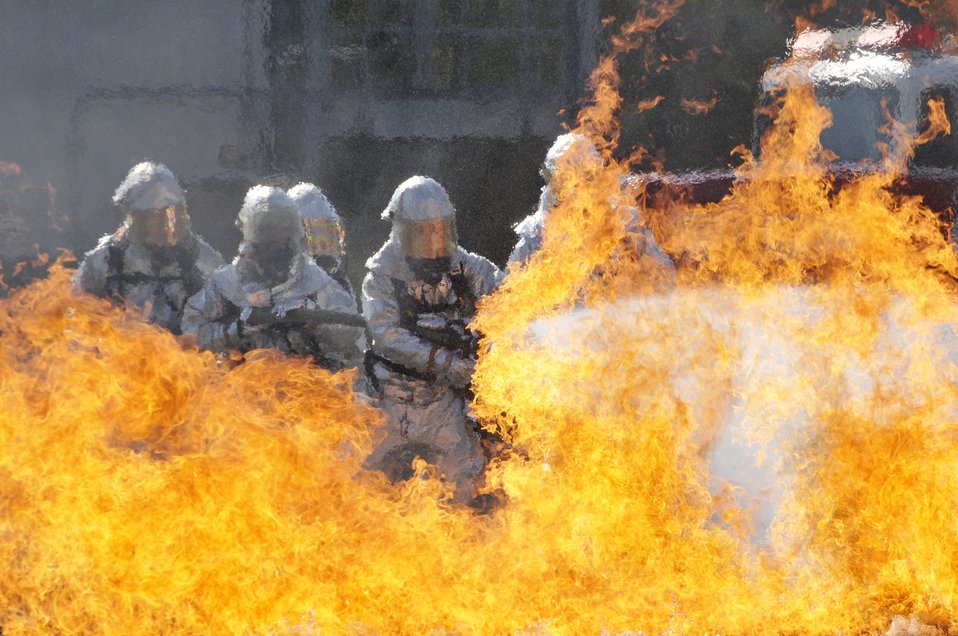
Crews train to fight fire

Firefighters from the 125th Fighter Wing at Jacksonville, Fla., and 71st Fighter Wing at Langley Air Force Base, Va, extinguish a fire in a burn pit at the Combat Readiness Training Center in Savannah, Ga., March 13, 2010. The burn pit is a live fire training simulator and re-creates most scenarios of a real aircraft fire.